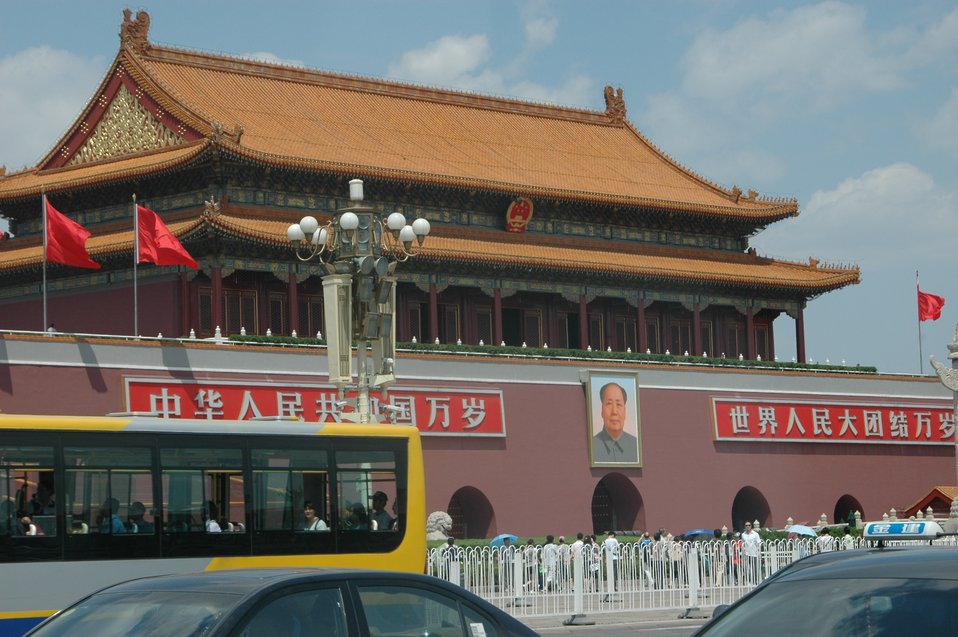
The Great Hall of the People

U.S. Secretary of State Hillary Rodham Clinton's staff member captures a photo of the Great Hall of the People in Beijing on May 24, 2010, before the start of the second round of the China-U.S. Strategic and Economic Dialogue.